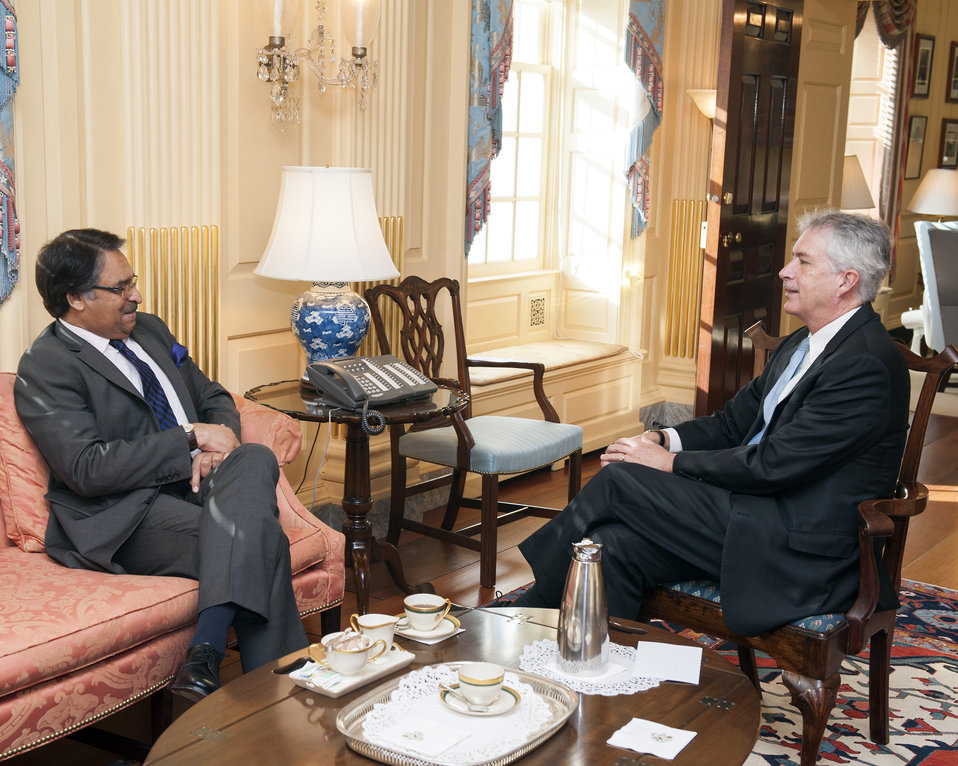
Deputy Secretary Burns Meets With Pakistani Ambassador Jilani

Deputy Secretary Bill Burns meets with Pakistani Ambassador to the United States Jalil Jilani at the U.S. Department of State in Washington, D.C., on January 16, 2014.